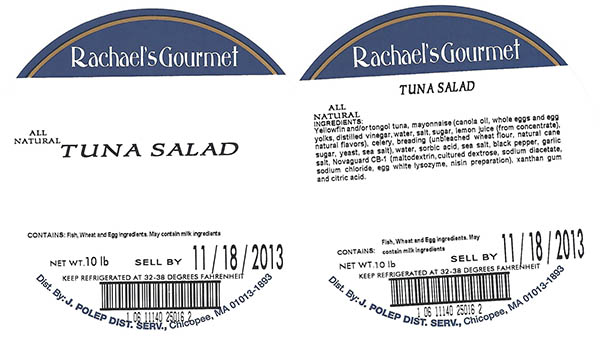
RECALLED – Prepared salads

October 24, 2013 – Product Recall – Boston Salads and Prepared Foods Recalling Ready-To-Eat Products Because of Possible Health Risk.